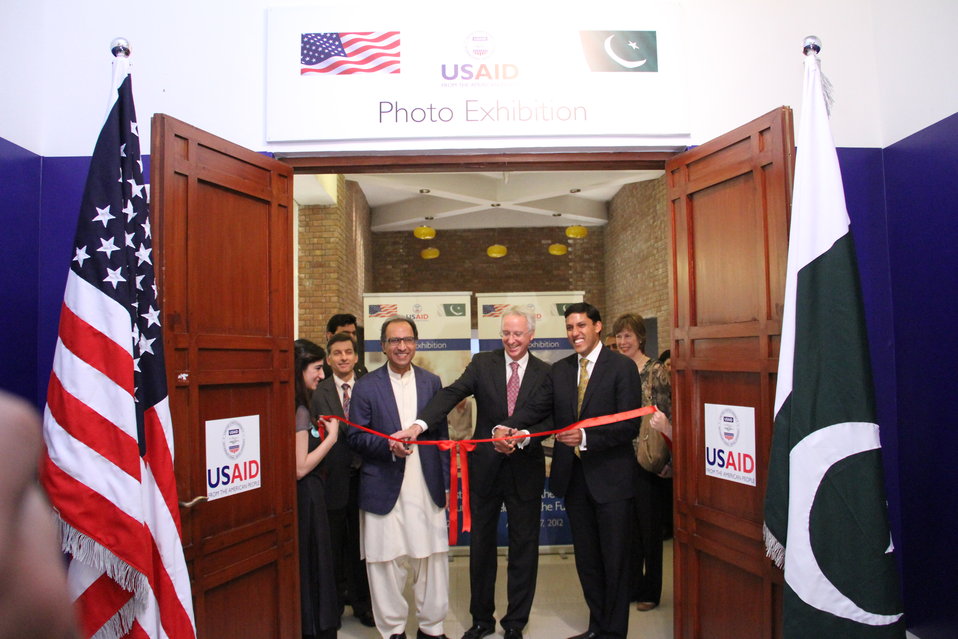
Photo Exhibition Celebrate US-PAK Cooperation at PNCA, Islamabad on April 13, 2012

Federal Minister for Finance Dr. Abdul Hafeez Sheikh, Dr. Rajiv Shah, Administrator of the USAID, and US Ambassador Cameron Munter inaugurating the photo exhibition celebrating more than six decades cooperation between the United Stated and Pakistan.